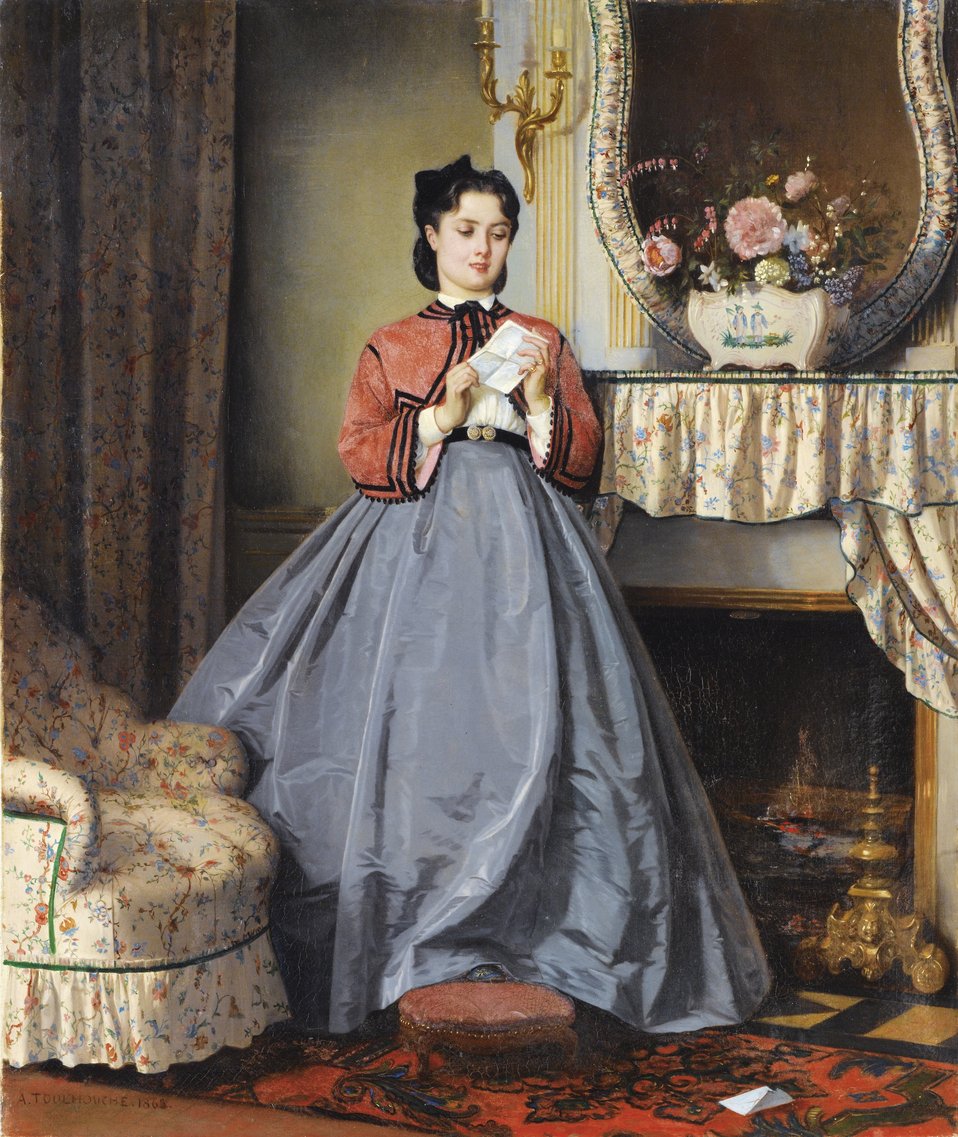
Auguste Toulmouche - The Love Letter, 1863